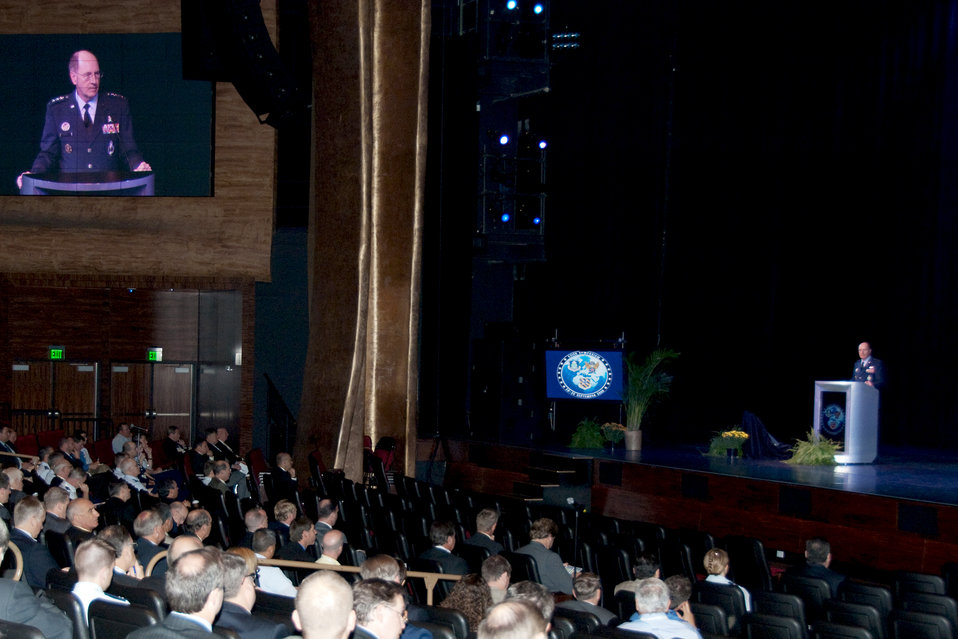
C2ISR Symposium

Gen. C. Robert Kehler, commander of Air Force Space Command, addresses the Air Force Command and Control, Intelligence, Surveillance and Reconnaissance Symposium Sept. 29, 2009, in Ledyard, Conn. The general is one of many Air Force and corporate leaders to make presentations at the symposium.